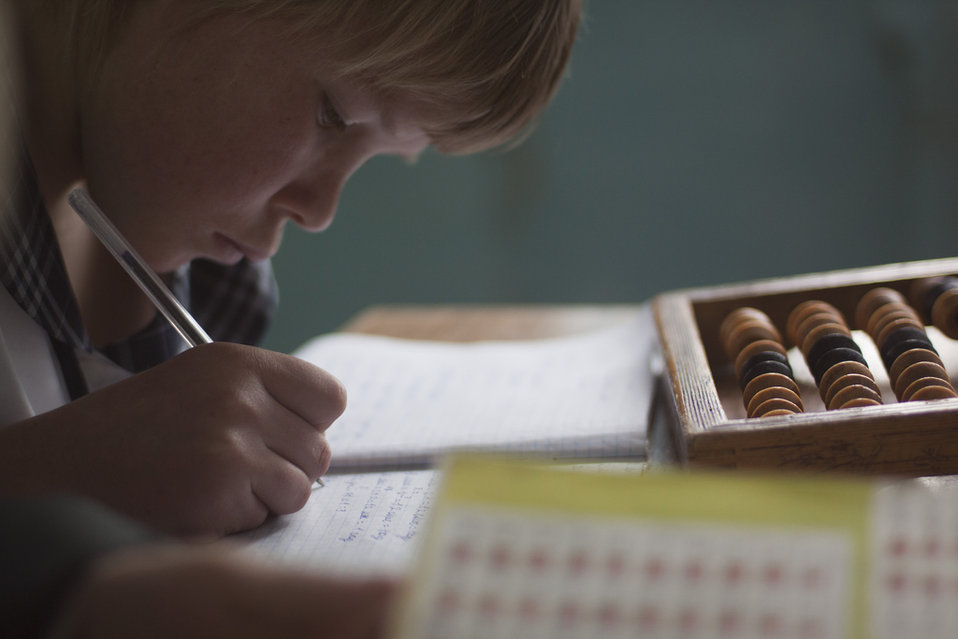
Charge d'Affaires Memmott Presents U.S. Grants To Support Kyrgyz Republic Orphanage

Larry Memmott, Chargé d'Affaires of the U.S. Embassy in Bishkek, Kyrgyzstan, presents two grants from the U.S. Government to support the rehabilitation of the Krasnaya Rechka orphanage in Krasnaya Rechka, Kyrgyzstan, on April 28, 2011.